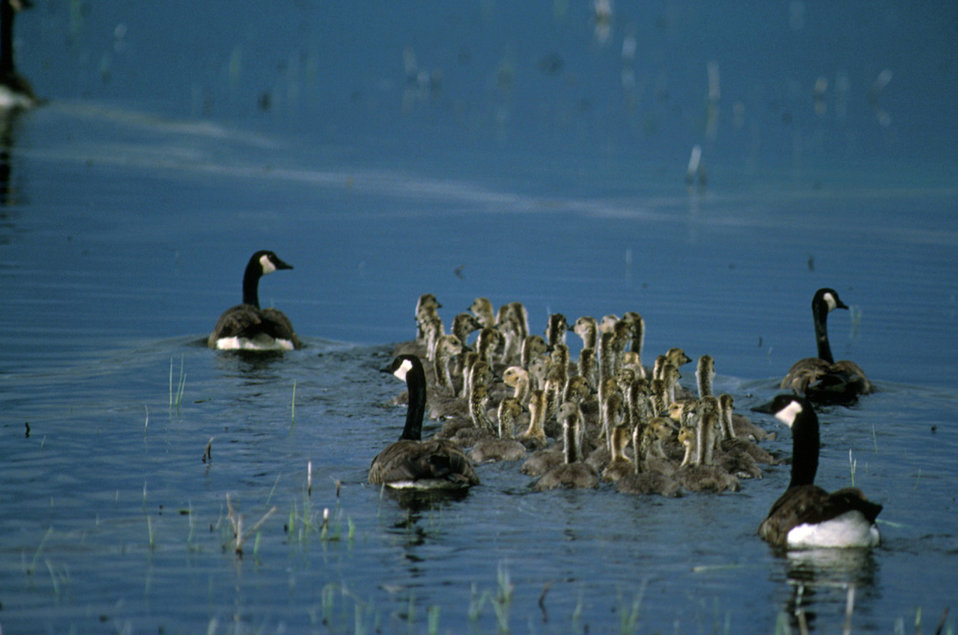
Canada geese with goslings

Canadian geese swimming with their young.